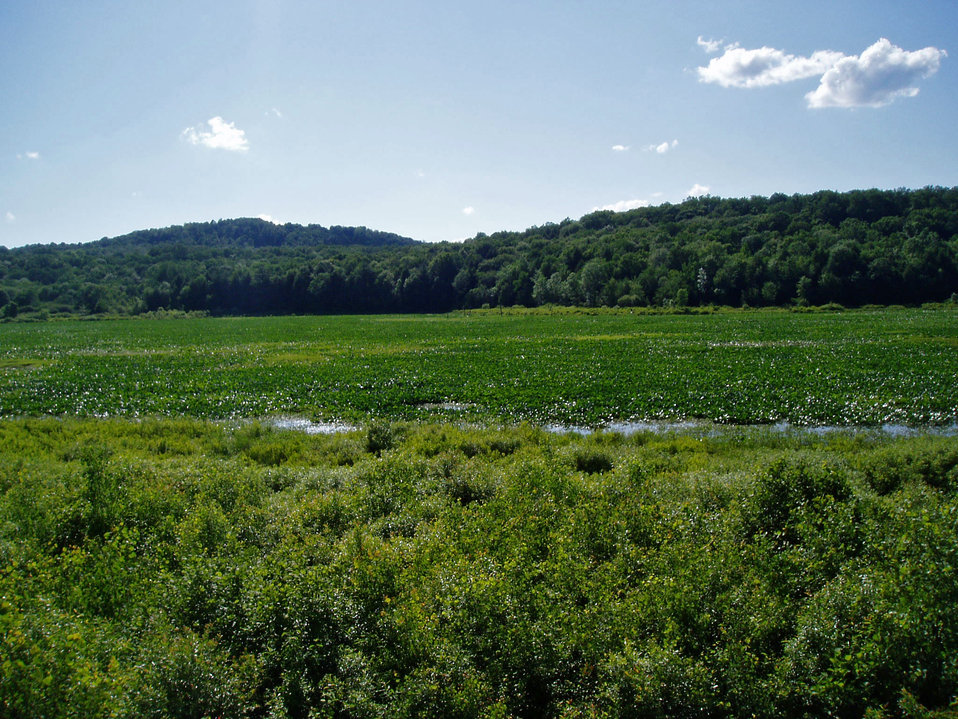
Erie National Wildlife Refuge